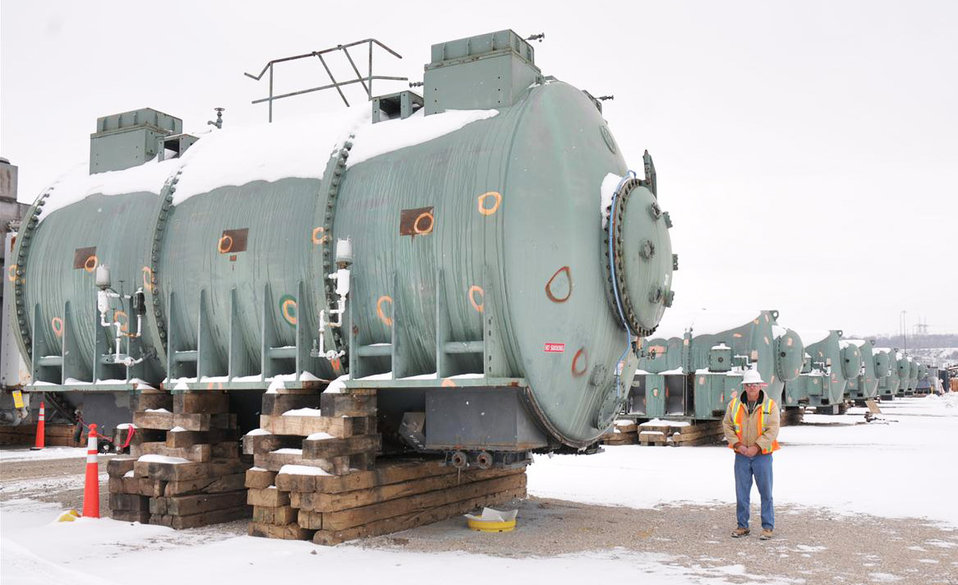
Portsmouth - Brian Klaiber

Strategic planning and effective communication from LATA/Parallax Portsmouth, LLC Superintendent Brian Klaiber were instrumental in removing all components of the 20-acre X-533 Electrical Switchyard. Here, Klaiber stands next to oil circuit breakers removed from the yard.